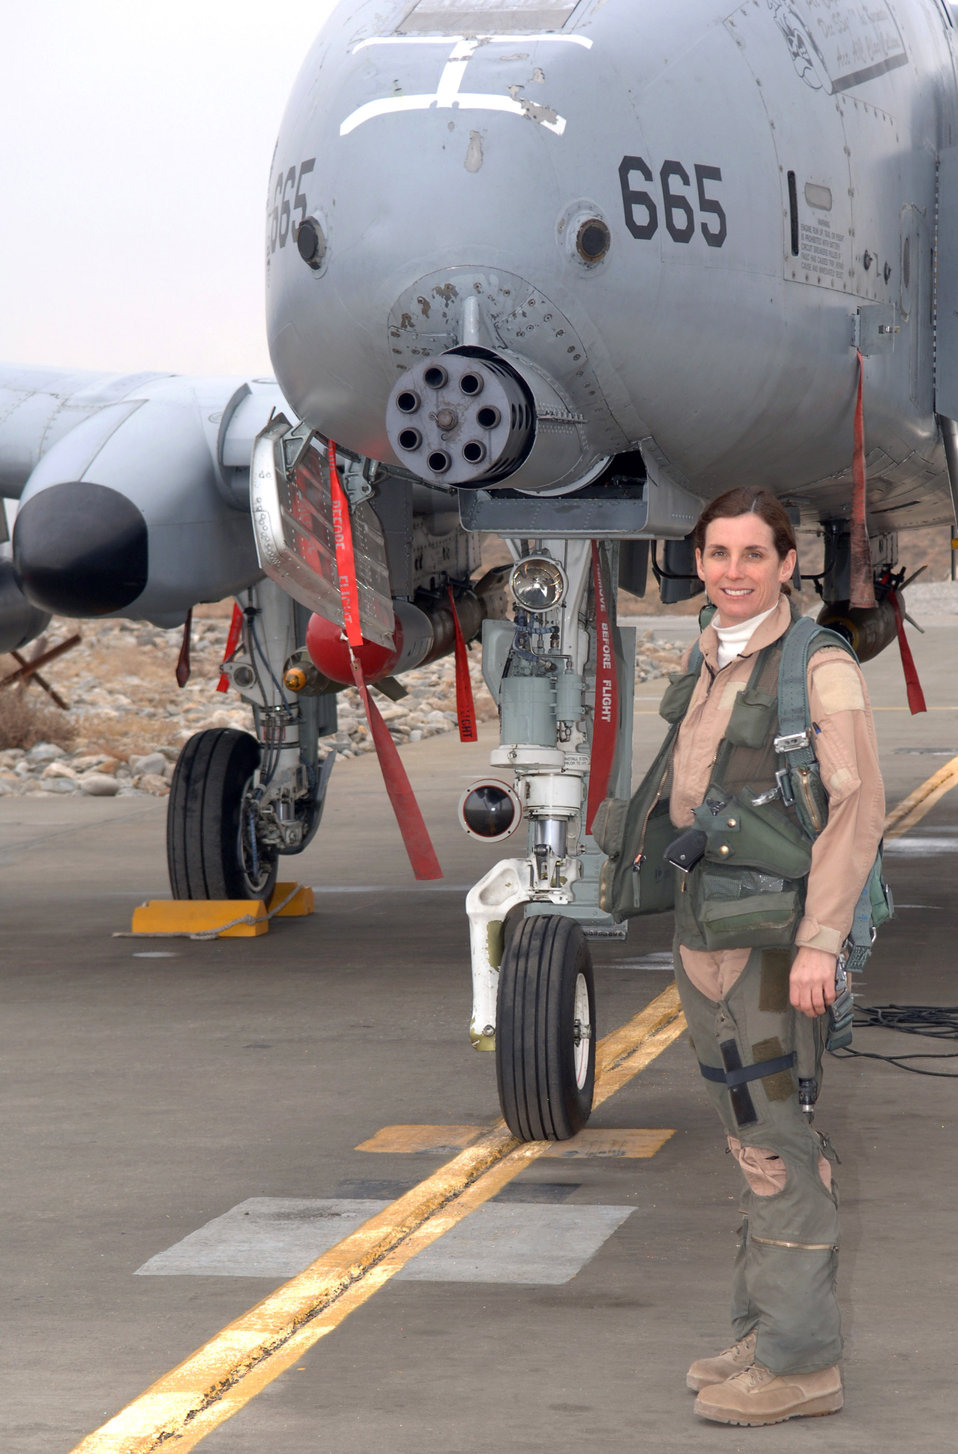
1st Air Force female pilot in combat reflects on career

Lt. Col. Martha McSally stands with her A-10 Thunderbolt II aircraft. The colonel is the first female pilot in the Air Force to fly in combat and to serve as a squadron commander of a combat aviation squadron.